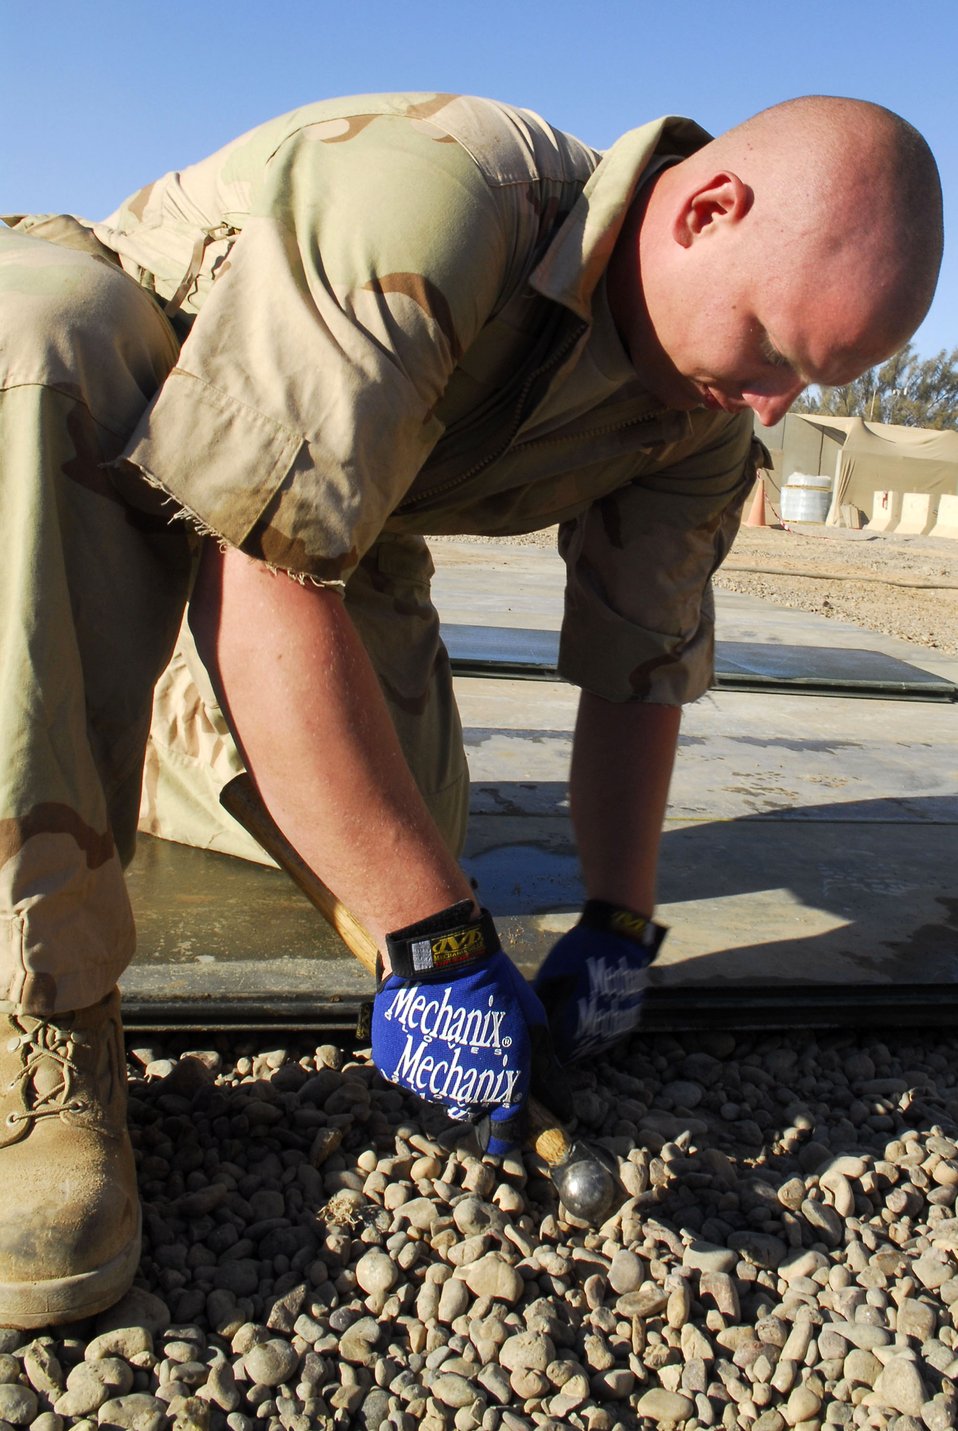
Muddy waters

Senior Airman Kevin Marshall connects two pieces of matting for the floor on the new vehicle maintenance overhang Nov. 25 at Balad Air Base, Iraq. The new overhang, which will be twice the size of its predecessor, will cover a leveled-gravel surface preventing water pockets from forming underneath the matting during the rainy season. Airman Marshall, a 727th Expeditionary Air Control Squadron vehicle maintainer, is deployed from Mountain Home Air Force Base, Idaho.